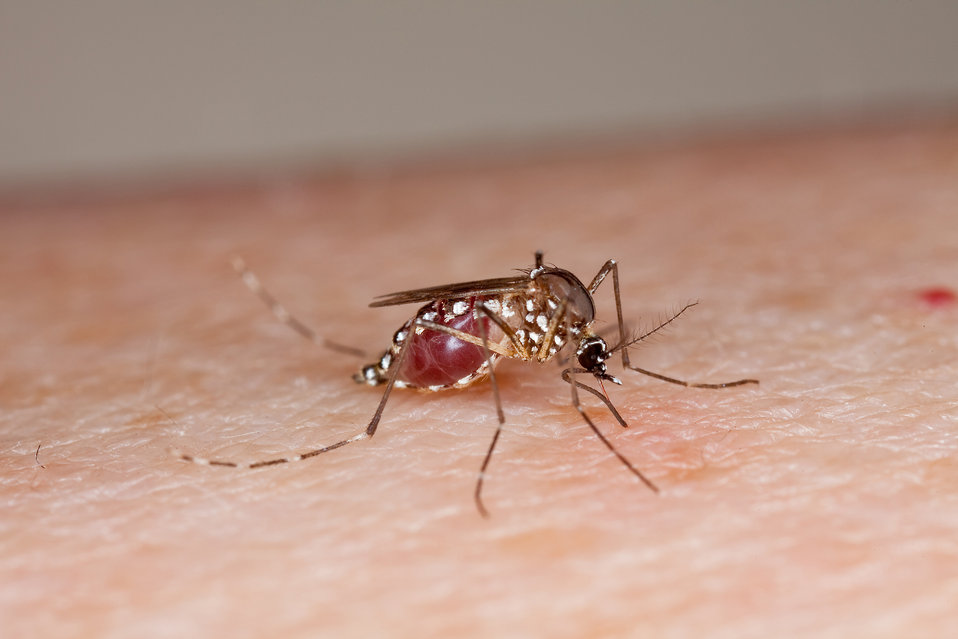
This female mosquito (Aedes aegypti) has filled up on human blood on May 23, 2012. The U.S. Department of Defense and U.S. Department of Agriculture (USDA) Agriculture Research Scientist (ARS) scientists are working to protect U.S. soldiers from this insect pest and other disease-spreading insects by developing new repellents, treated fabrics, and more.